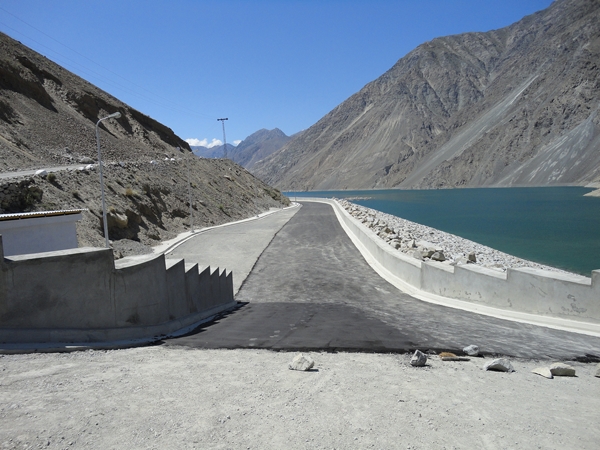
Satpara